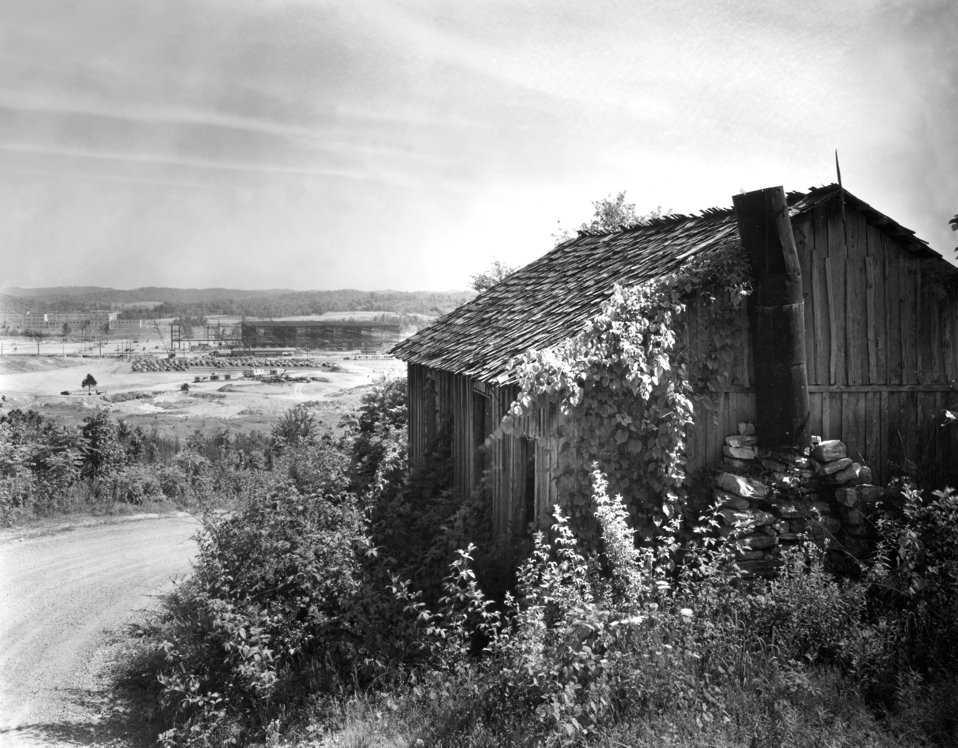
Early Construction K-25 plant with one of original houses Oak Ridge

MED245 DOE photo by Ed Westcott Early Construction K-25 plant with one of original houses Oak Ridge Tennessee 1942